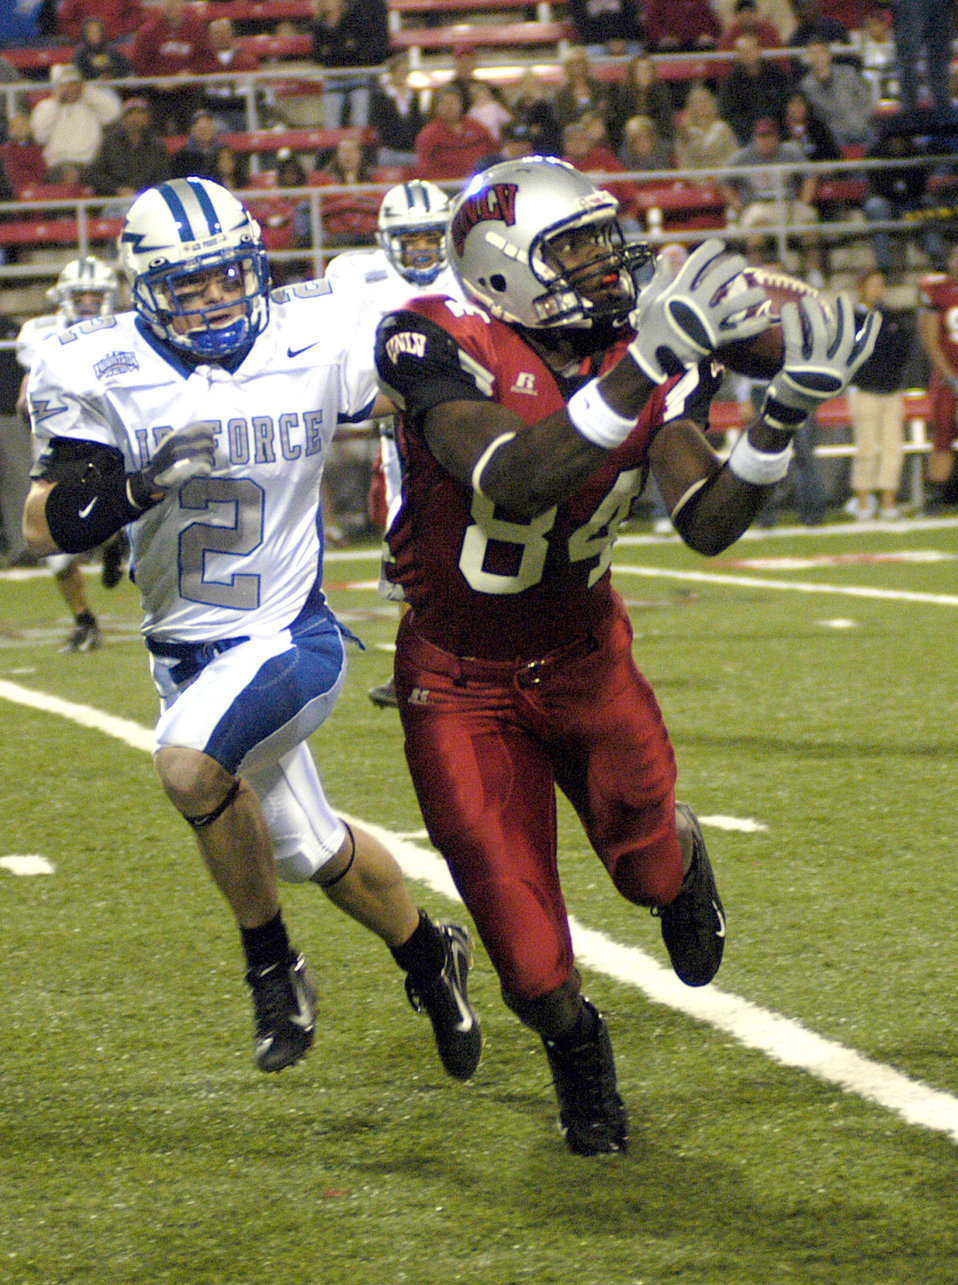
UNLV edges AF in 42-39 shootout

University of Nevada-Las Vegas tight end Rodelin Anthony, 84, hauls in a pass against Falcons cornerback Carson Bird Nov. 24 at Las Vegas. Anthony finished the night with two catches for 35 yards as the Rebels picked up their second win of the season 42-39.